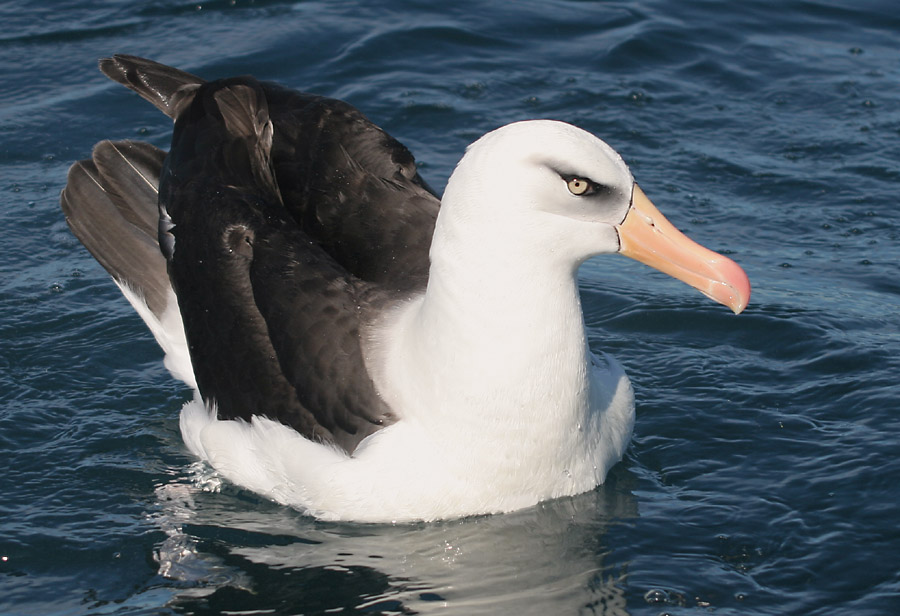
Thalassarche impavida, Diomedeidae. Campbell Albatross